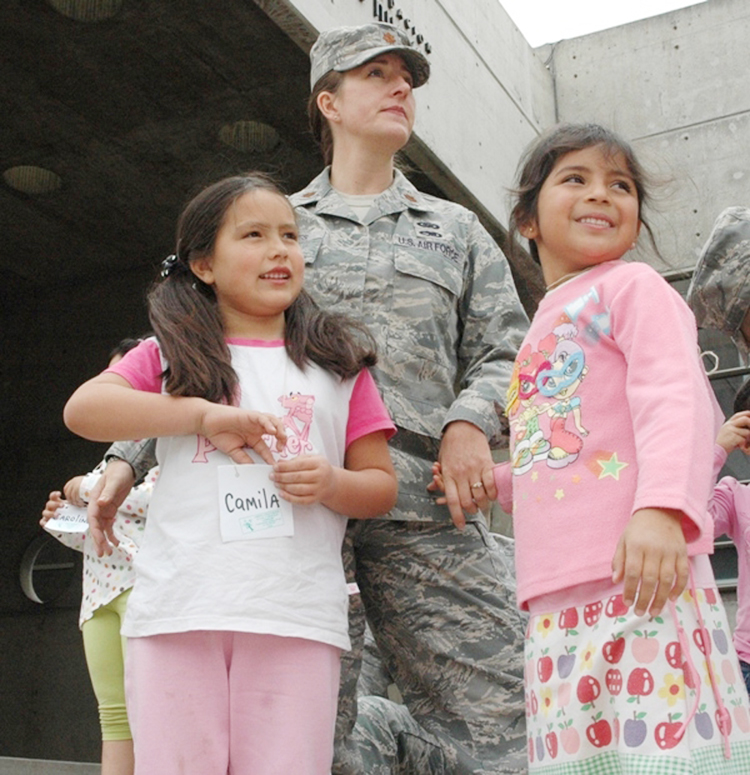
Airmen spend day with Chilean children

Maj. Jana Nyerges waits with children from the Angels Community Center outside a museum prior to sponsoring the children's admission to the science exhibits Oct. 13, 2009, in Santiago, Chile. Airmen decided to use their first day in Chile to sponsor a group of at-risk children during a visit to the museum. Major Nyerges is a member of Air Forces Southern participating in a subject matter exchange with the Chilean air force.